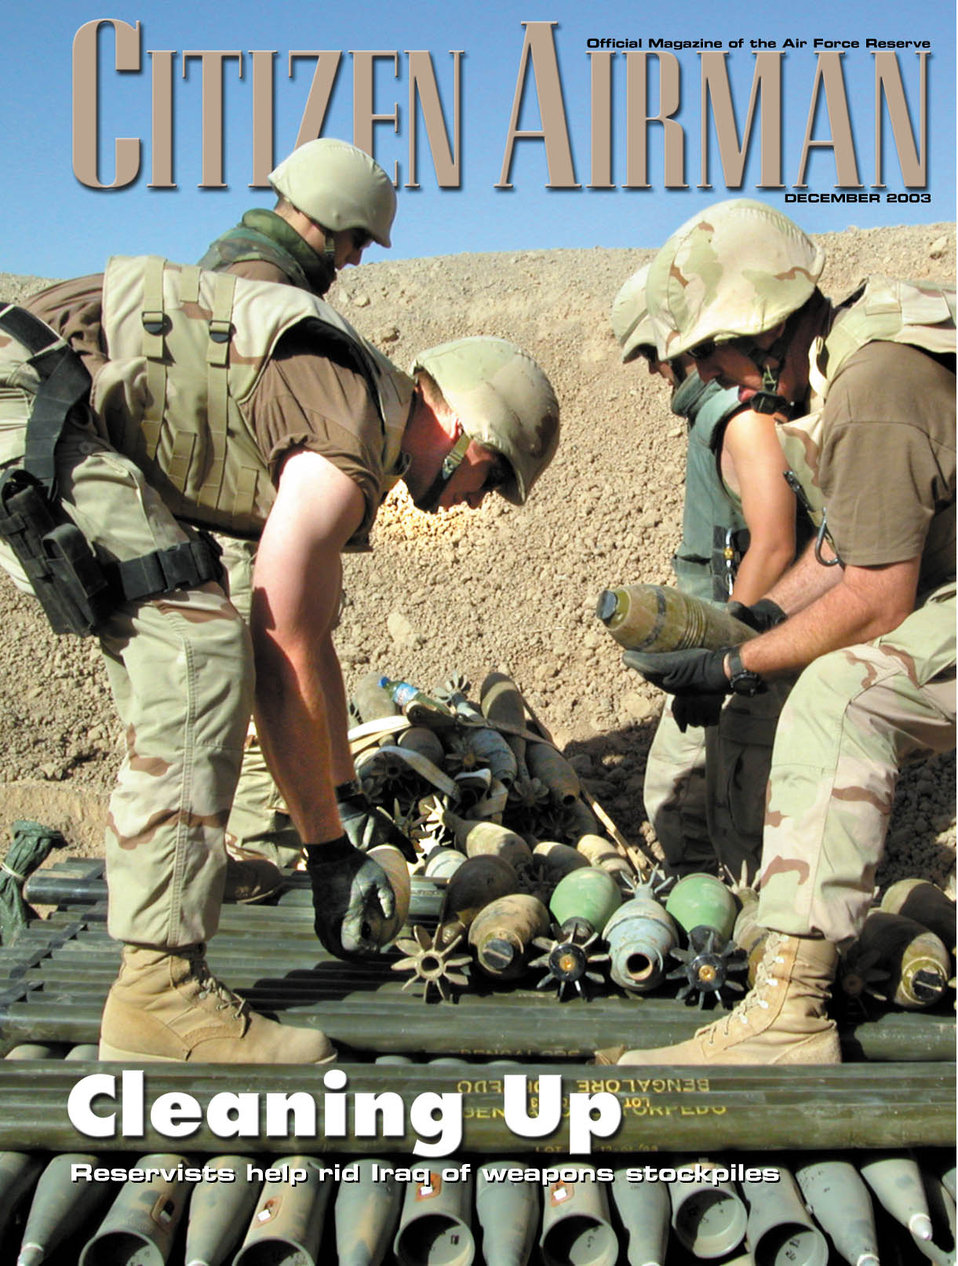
Citizen Airman cover

ROBINS AIR FORCE BASE, Ga. -- The December issue of Citizen Airman is now available.